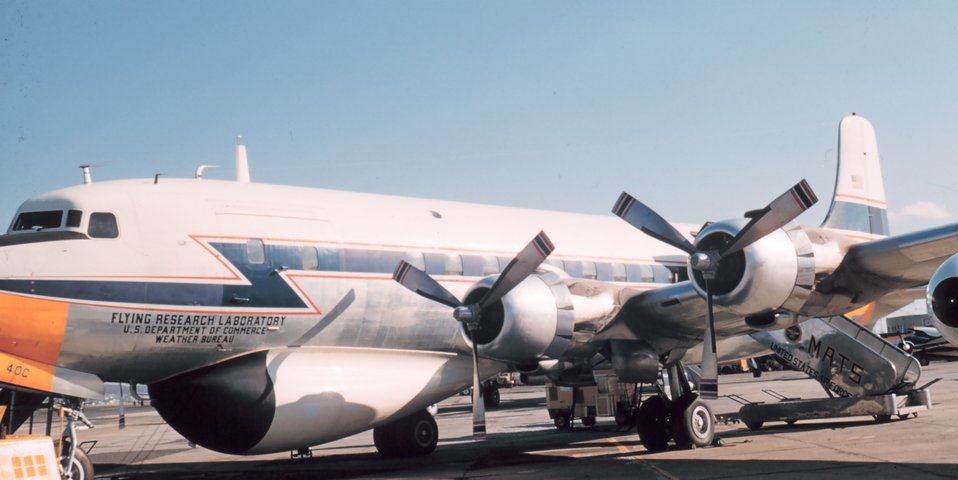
Weather Bureau DC-6 N6540C on the ground